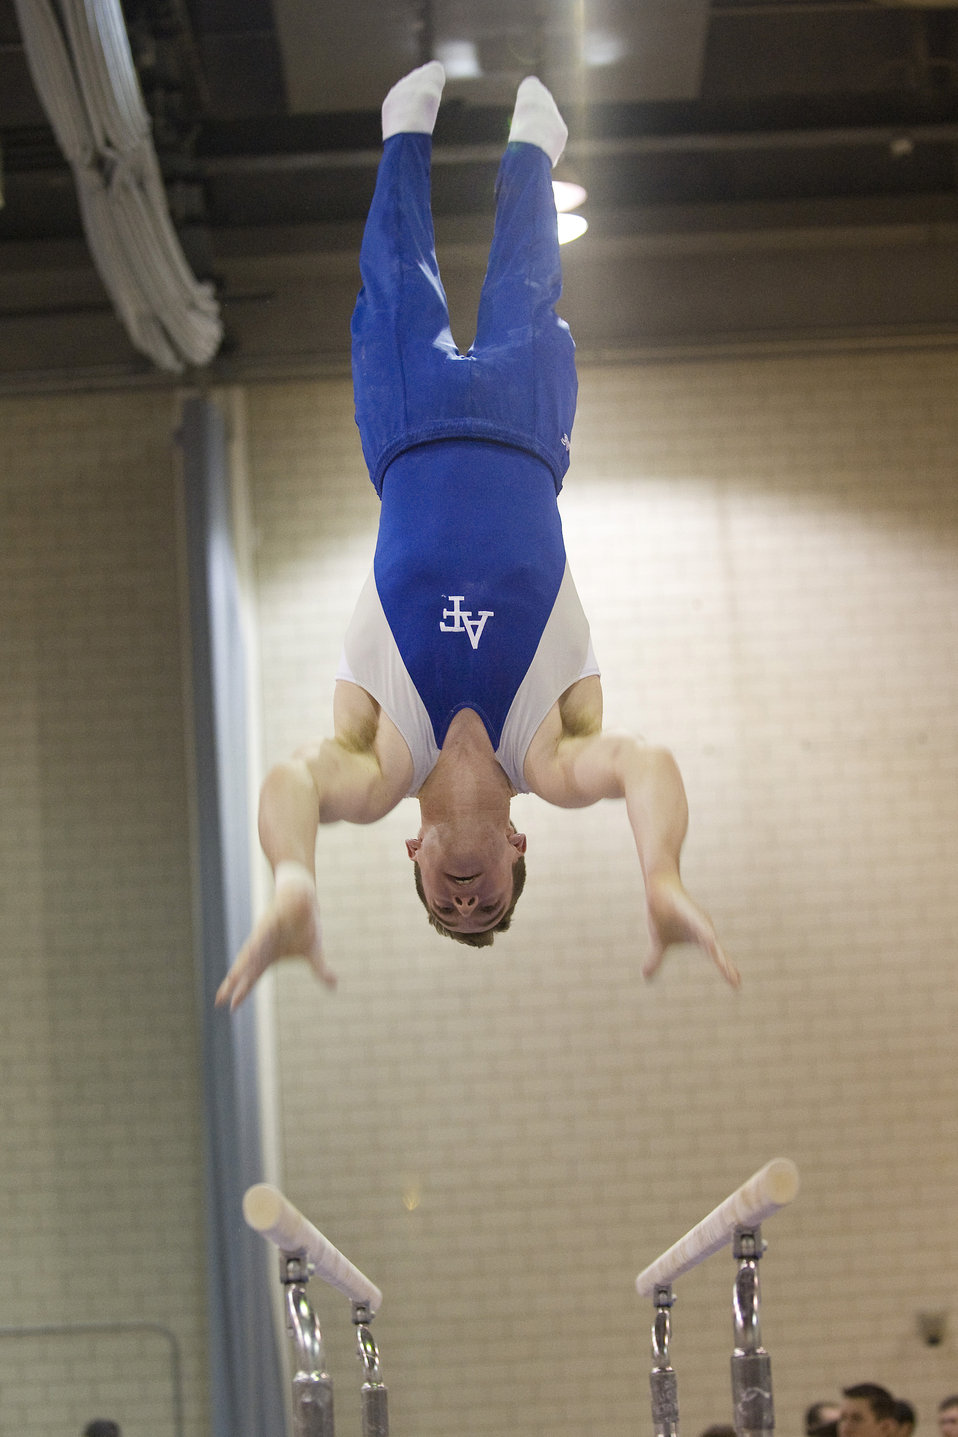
Falcons open season with Rocky Mountain event

Academy freshman Tory Brown performs on the parallel bars during the Rocky Mountain Open meet held in the field house at the U. S. Air Force Academy, Colo., Jan. 16, 2010. In addition to his performance on the bars, Brown led the Falcons in the floor exercise with a 7th place finish with a mark of 14.150.